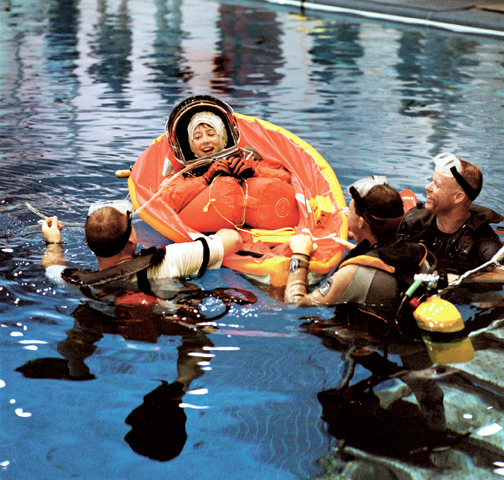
Emergency bailout training

HOUSTON -- Astronaut and pilot Col. Pam Melroy is assisted by three scuba-equipped divers in the deep pool at the Neutral Buoyancy Laboratory at the Sonny Carter Training Facility near the Johnson Space Center. She and the rest of the STS-92 crew were participating in an emergency bailout training exercise preparing for next year's scheduled visit to the International Space Station.